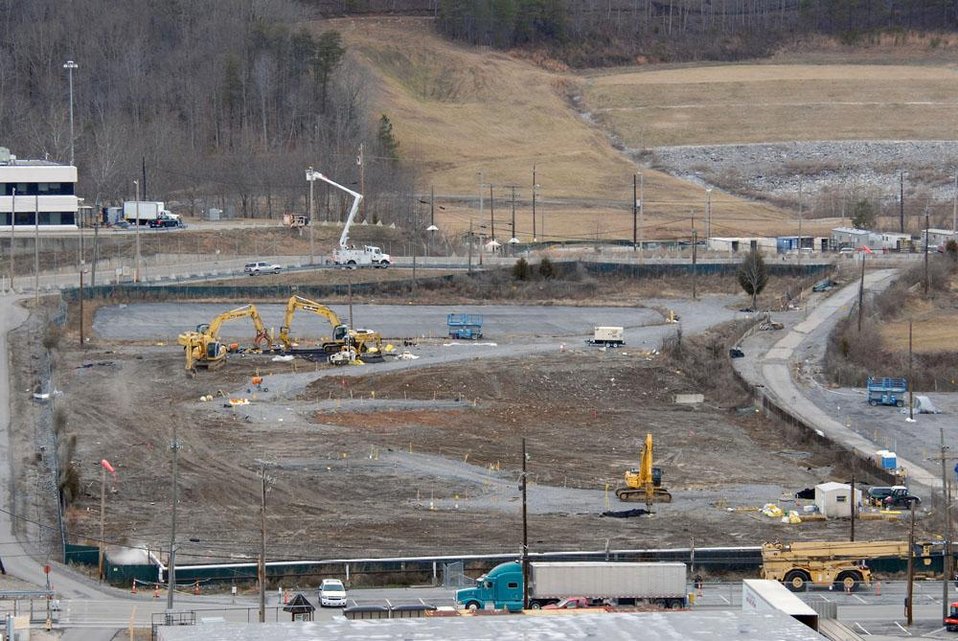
Oak Ridge - Y-12 Scrap Yard cleanup

Using savings from other Recovery Act projects, the EM program is remediating the seven-acre area once used for Y-12’s Scrap Yard.